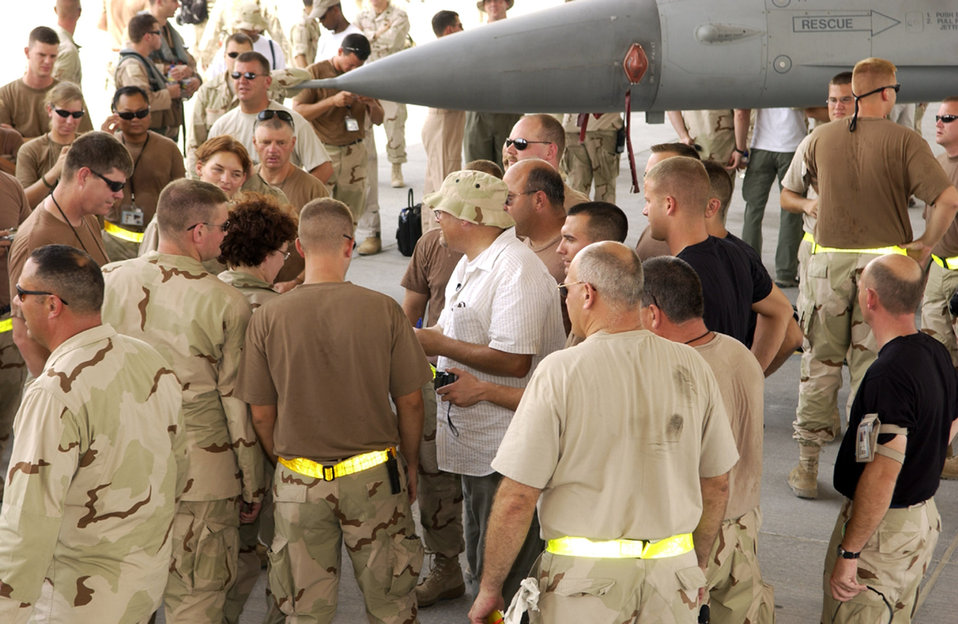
Television star visits troops in Southwest Asia

SOUTHWEST ASIA -- Drew Carey is surrounded by Airmen at this forward-deployed location during a visit Aug. 24. Mr. Carey was part of a five-person comedic team traveling the area to entertain forward-deployed troops.